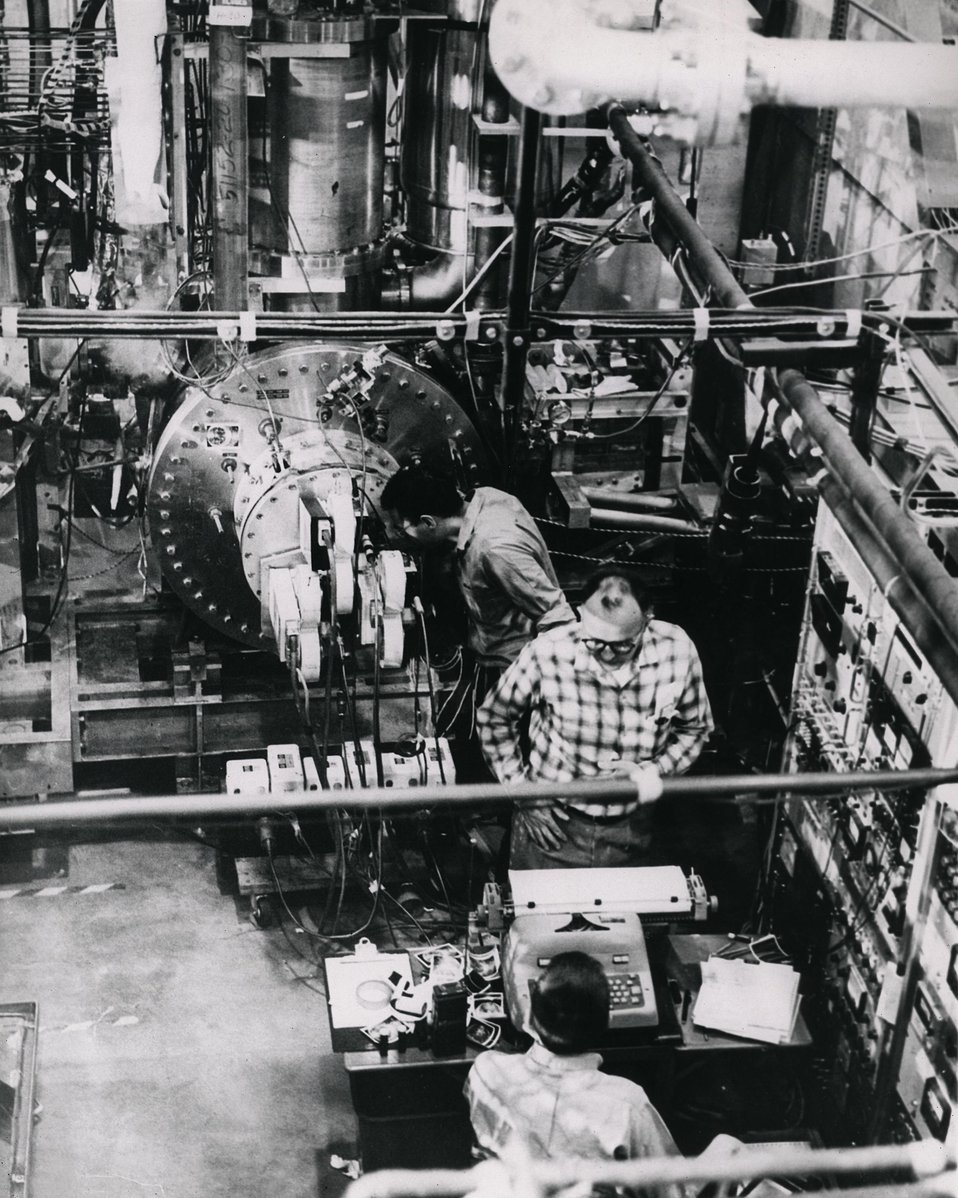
This apparatus at Argonne houses a 10-inch liquid helium bubble chamber mounted inside the world's most powerful large-scale superconducting magnet.